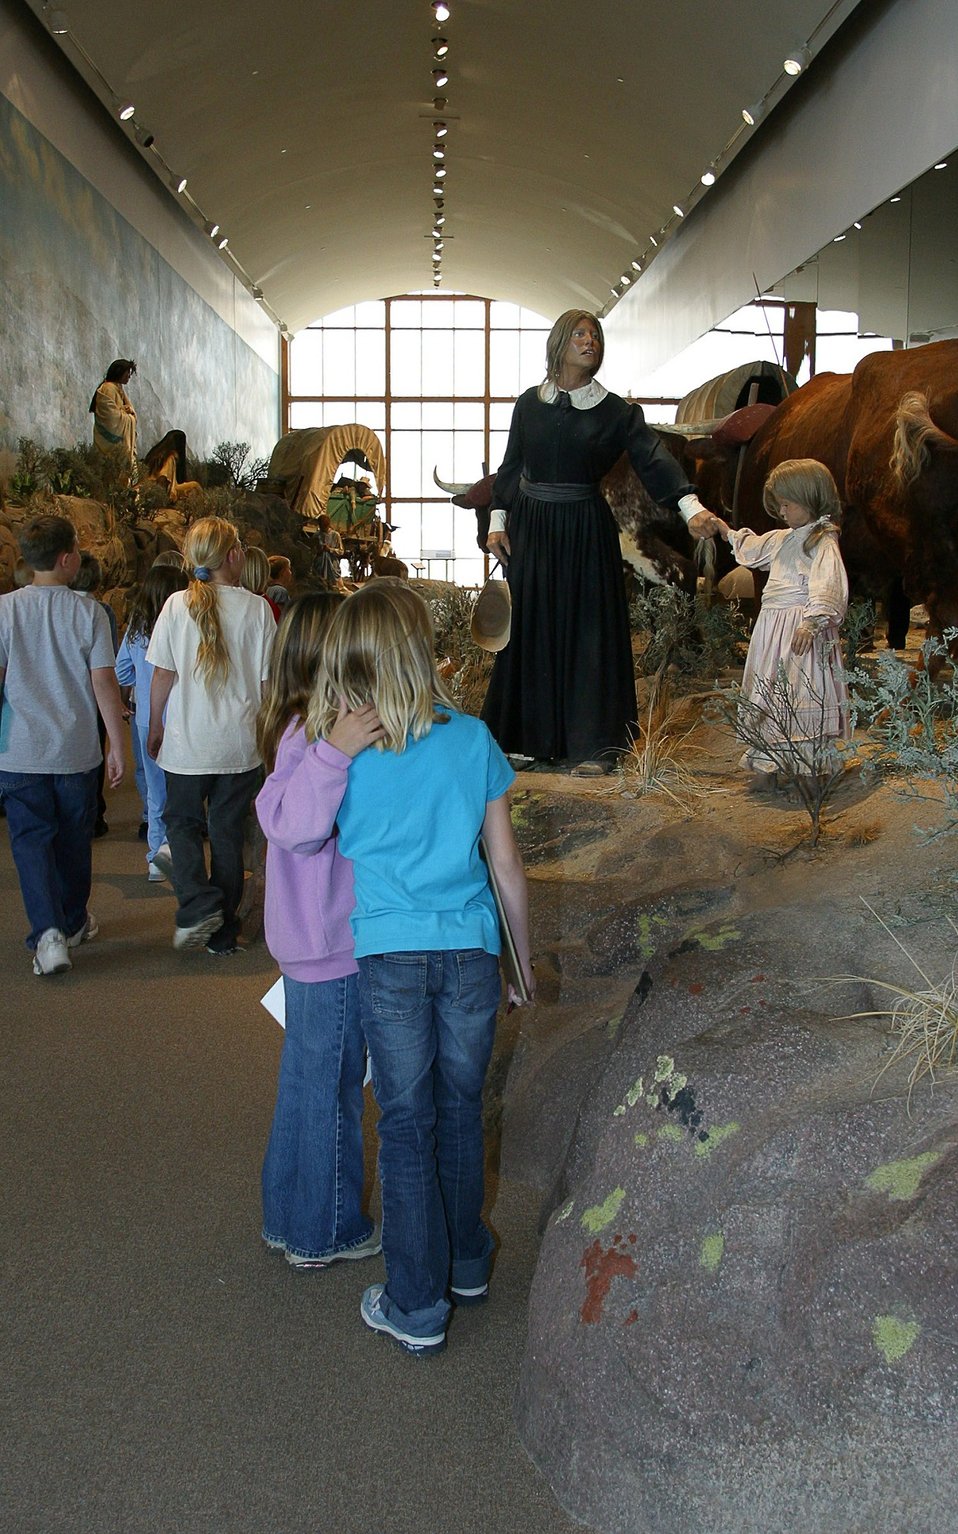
Hundreds of school children visit the National Historic Oregon Trail Interpretive Center every year.